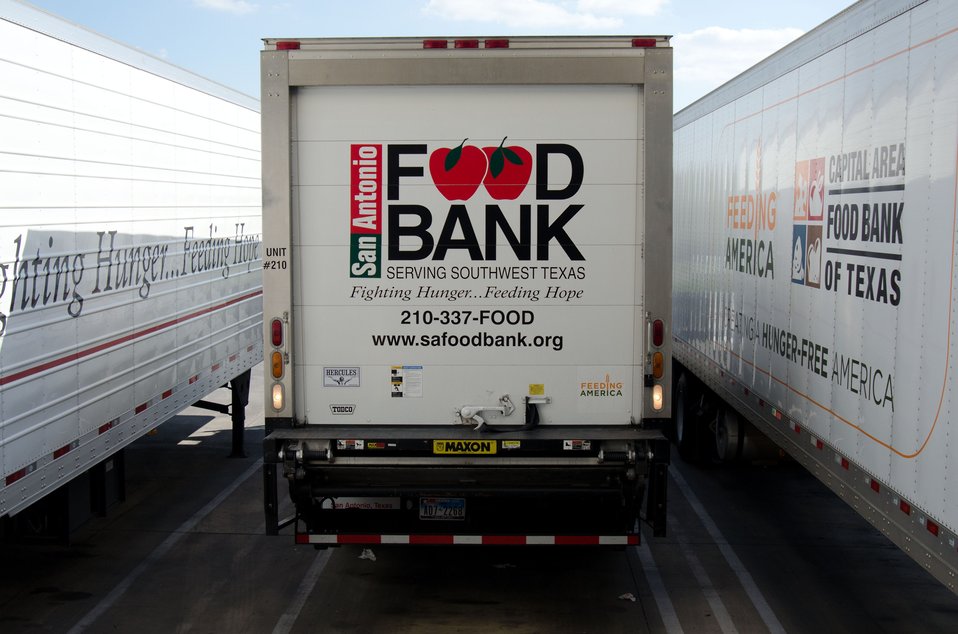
SAFB is a non-profit organization that serves as a clearinghouse by receiving and storing truckloads of donated food, produce, and other grocery products in. Their fleet of trucks and tractor trailer rigs support the distribution of '...more than 44 million pounds of food, produce, and grocery products. These products are distributed over 500 human service agencies that help southwest Texans in 16 counties. By partnering with SAFB, these agencies save more than $70 million in food purchase costs. These values represent almost 4.6 million meals per month going to 40,000 poor and hungry families in the San Antonio area,' states SAFB.
“We couldn’t do what we do without our partnership with USDA’” said President and CEO Eric Cooper. He continues, “We are privileged in partnering (with the USDA) to feeding kids, through the summer, with the Summer Food Service Program, and throughout the year, with the Child and Adult Care Feeding Program (CACFP). Then in our approach to feeding seniors, we partner with USDA in the CSFP, and the Senior Farmer’s Market (Nutrition) Program. And then work to bring all our (needy) parties together with our Supplemental Nutrition Assistance Program (SNAP) Outreach. You know, once families have access to food we believe it is important to educate them. Through the support of the SNAP-Education Program we are able to educate them during their time of need. With this comprehensive approach we are really able to get the right food, at the right amount, at the right time, to needy families throughout our community – which allows us to feed the fifty-eight thousand we do, each week.”
SAFB serves 16 counties in Southwest Texas and states, “Nearly one out of every four children and one out of every five adults in Southwest Texas lives in poverty and has difficulty meeting basic nutritional needs.” According to SAFB, sixty-five percent of the people requesting emergency food have children. “Additionally, the senior citizens and those living on a fixed income generally have limited funds for a consistent grocery budget.”
San Antonio is the seventh largest city in the nation with surrounding farms and ranches near its rivers and water supplies. When available they provide fresh surplus produce. Other commodities come from the food industry and manufacturers. The major food brand companies that for various reasons have surplus commodities donate it to SAFB.
The United States Department of Agriculture donates commodities through programs such as The Emergency Food Assistance Program (TEFAP), while Texas farmers supply fresh produce to their Fresh Produce Program.
Public donations come in the form of money, food, volunteer time, and advocacy.